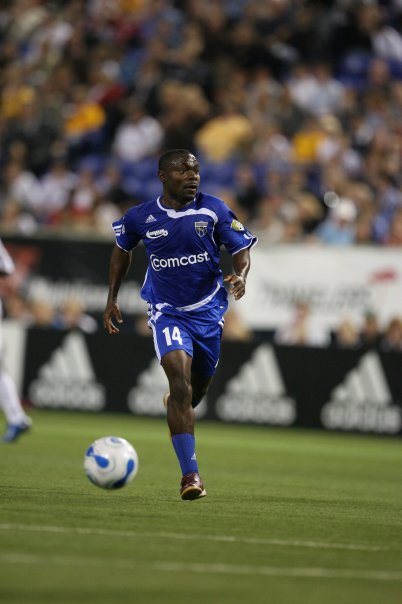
Leo Gibson playing for the Minnesota Thunder